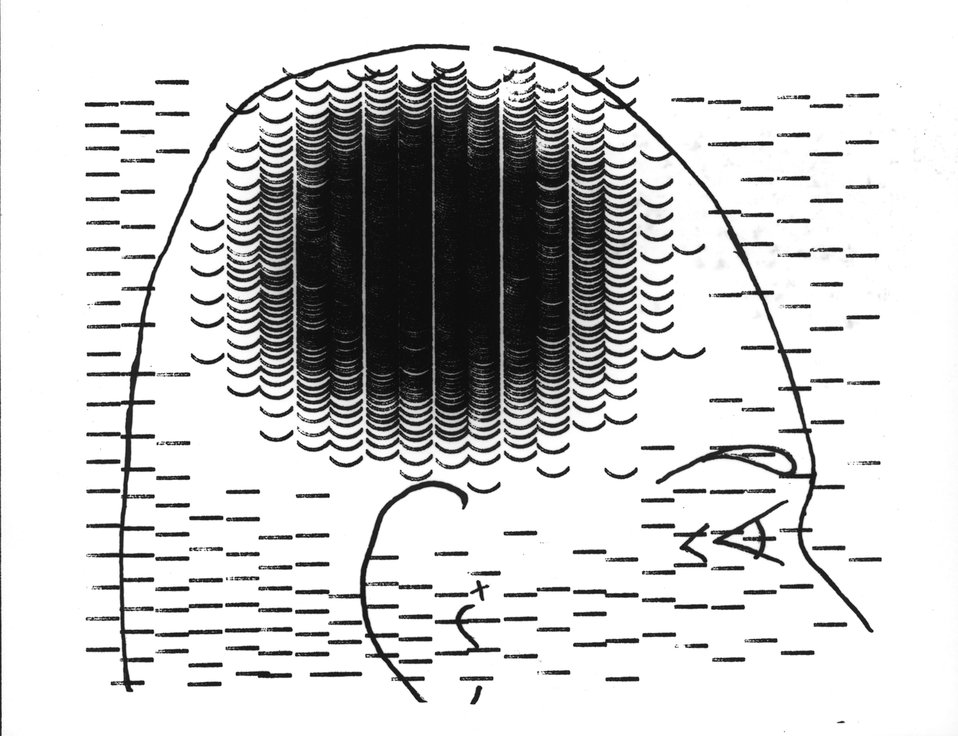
Brain scan made with positron scanner and arsenic. Curved markings indicate increased uptake to right of the mid line, and straight markings increased uptake to the left. Circa 1964.